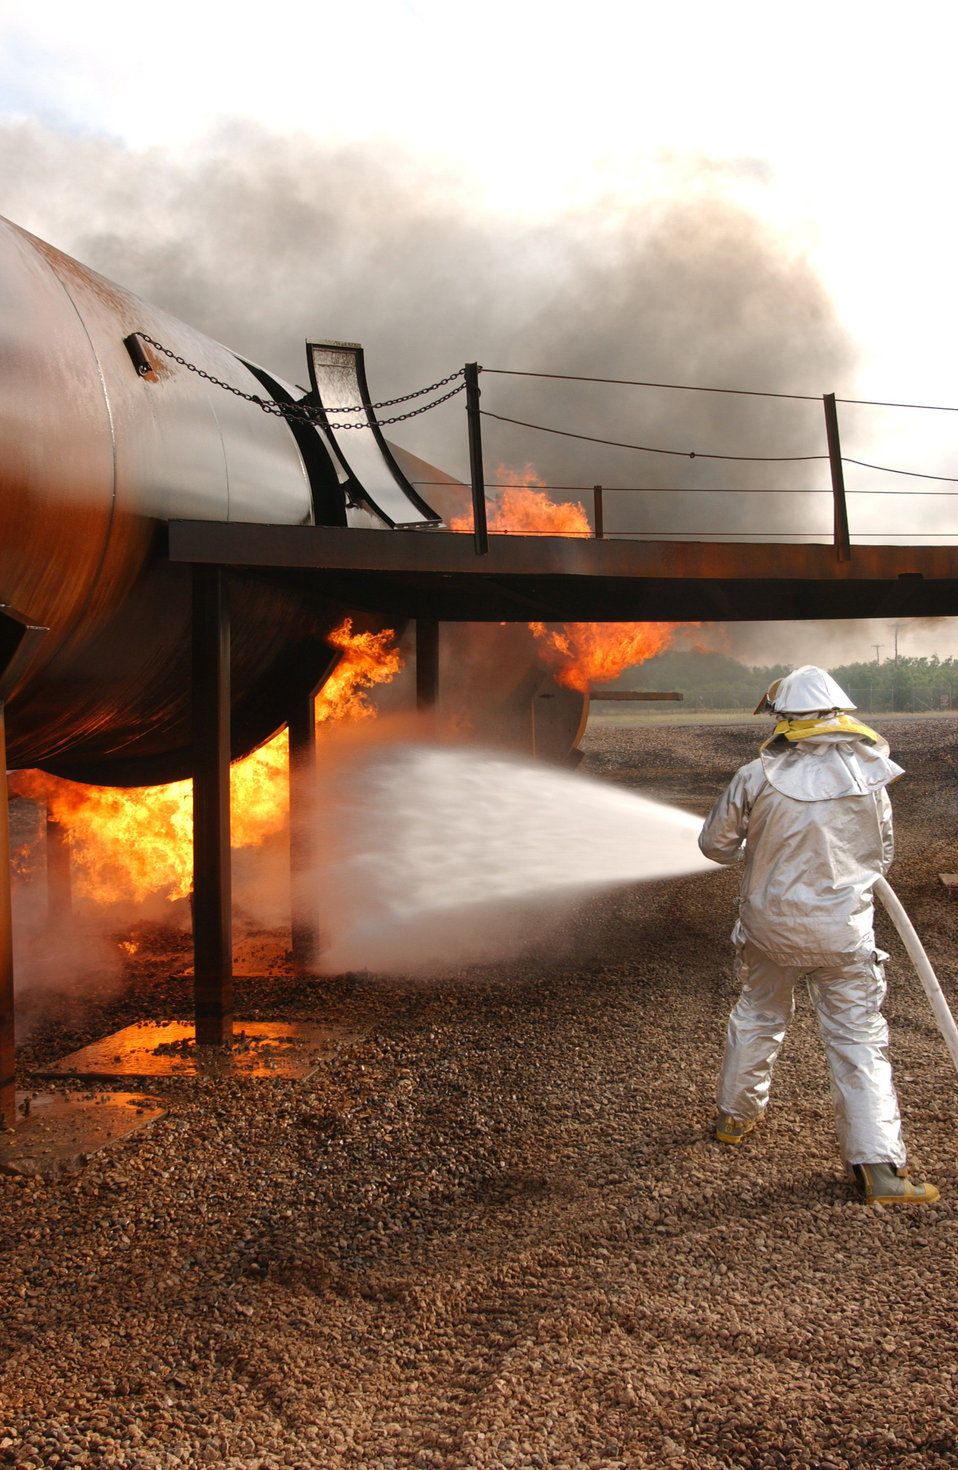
Keeping sharp

DYESS AIR FORCE BASE, Texas -- Senior Airman Robert Hutchison extinguishes a simulated aircraft fire here May 17. The exercise ensures the skills of each firefighter remain sharp. Airman Hutchison is a firefighter from the 7th Civil Engineer Squadron.